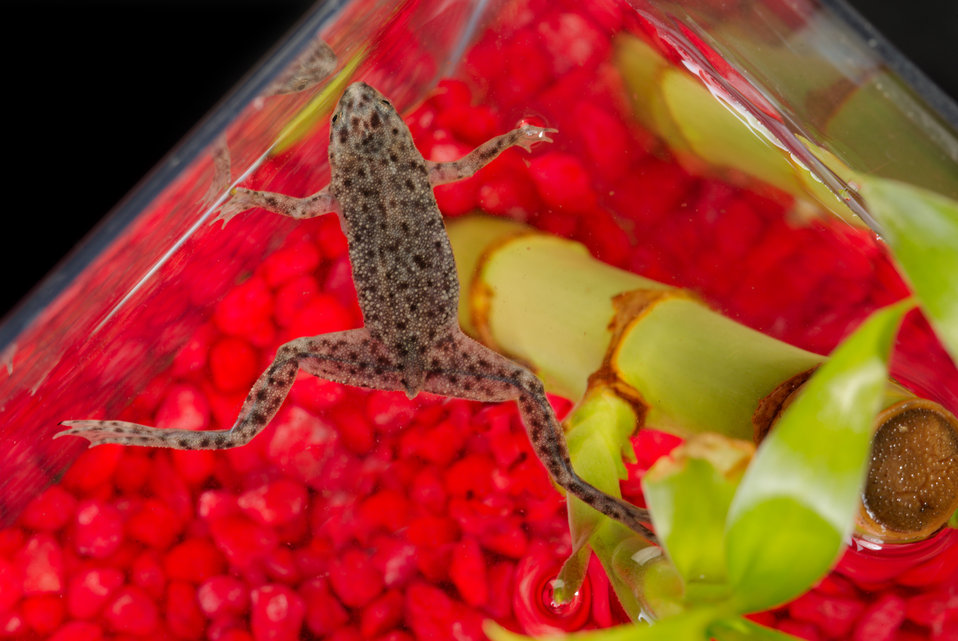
This photograph depicts an African dwarf frog, Hymenochirus boettgeri.